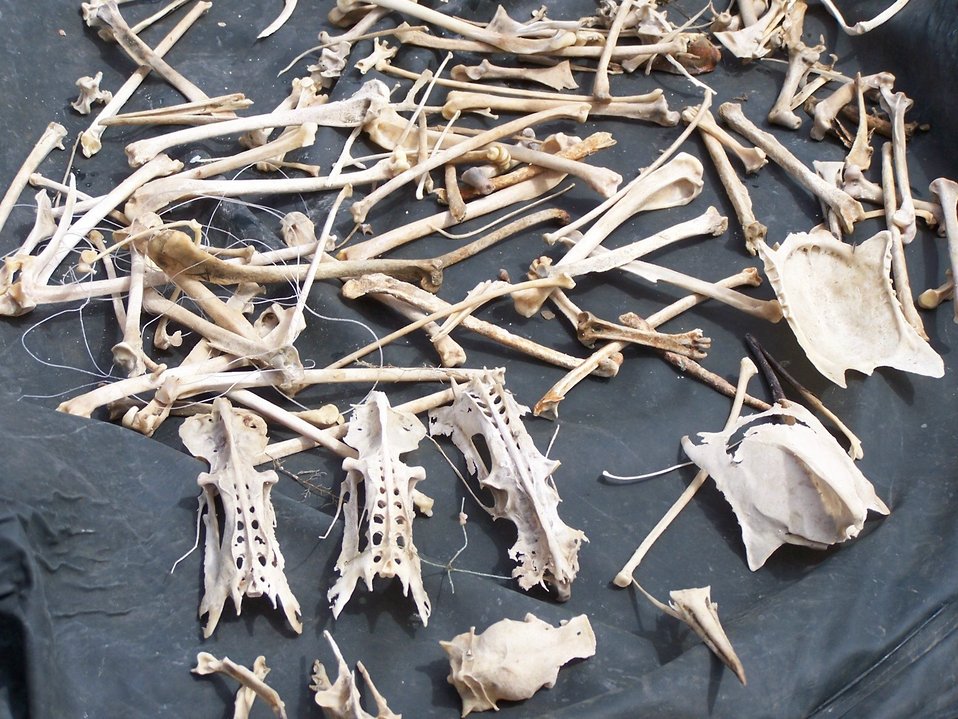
Bird bones found from the USFWS Puget Sound Coastal Program's Derelict Fishing Gear Project, Credit USFWS Joan Drinkwin

The USFWS Coastal Program in Puget Sound, Washington has worked over the last six years to collect derelict fishing gear. They have recovered 3,600 partial gillnets, averaging 7,000 square feet each, which has eliminated the needless deaths of more than 1.1 million marine mammals, fish, birds and invertebrates each year.